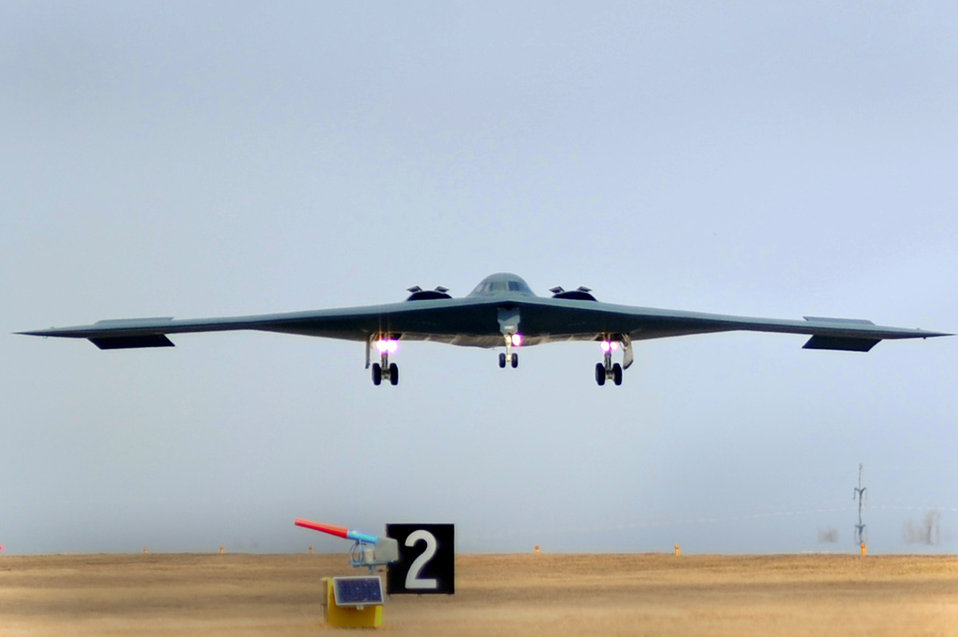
B-2 crews prepare for mission

A B-2 Spirit returns to Whiteman Air Force Base, Mo., March 20, 2011, after a mission.